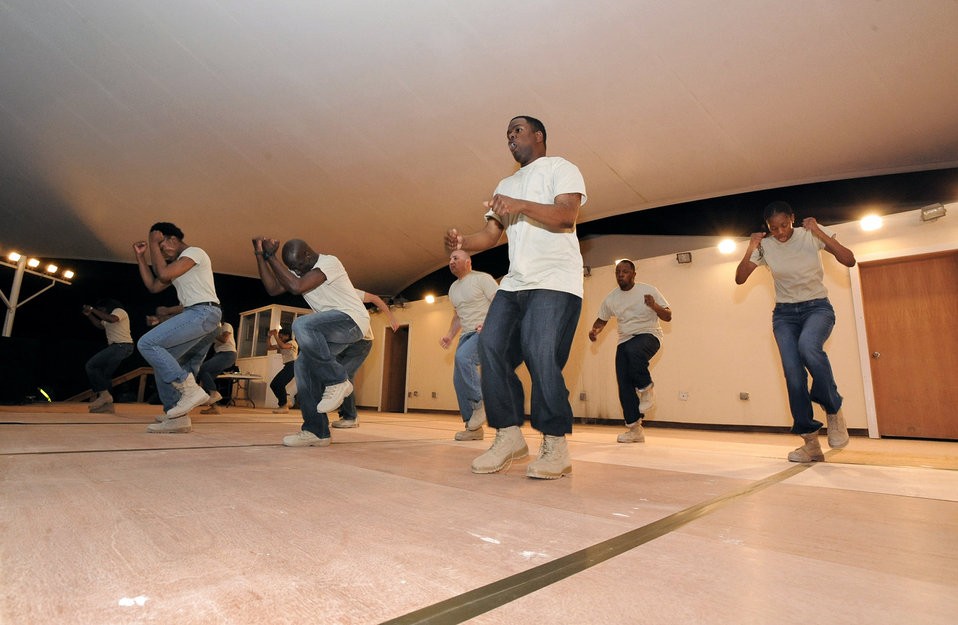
Step it up

Members of a base Step team perform a Step routine during a special edition Karaoke Review in celebration of African American History month in Southwest Asia Feb. 15. The team comprised of various coalition servicemembers performed several step-dance routines. This version of step-dancing or